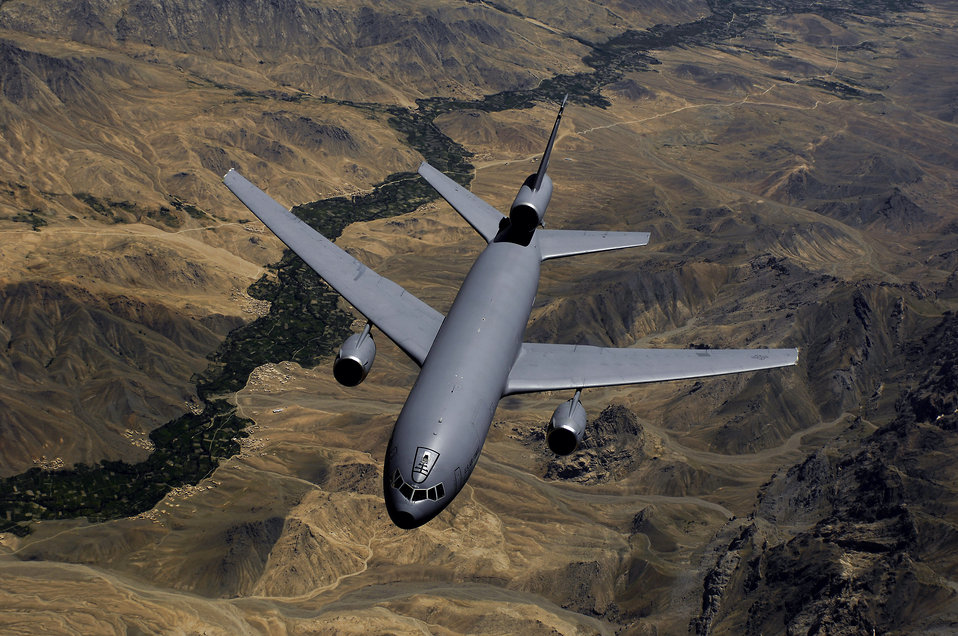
Jan. 25 airpower summary: KC-10s support refueling missions

A KC-10 Extender supports air refueling missions over Afghanistan. Air Force and coalition tankers flew 42 sorties and off-loaded approximately 2.7 million pounds of fuel to 200 receiving aircraft.